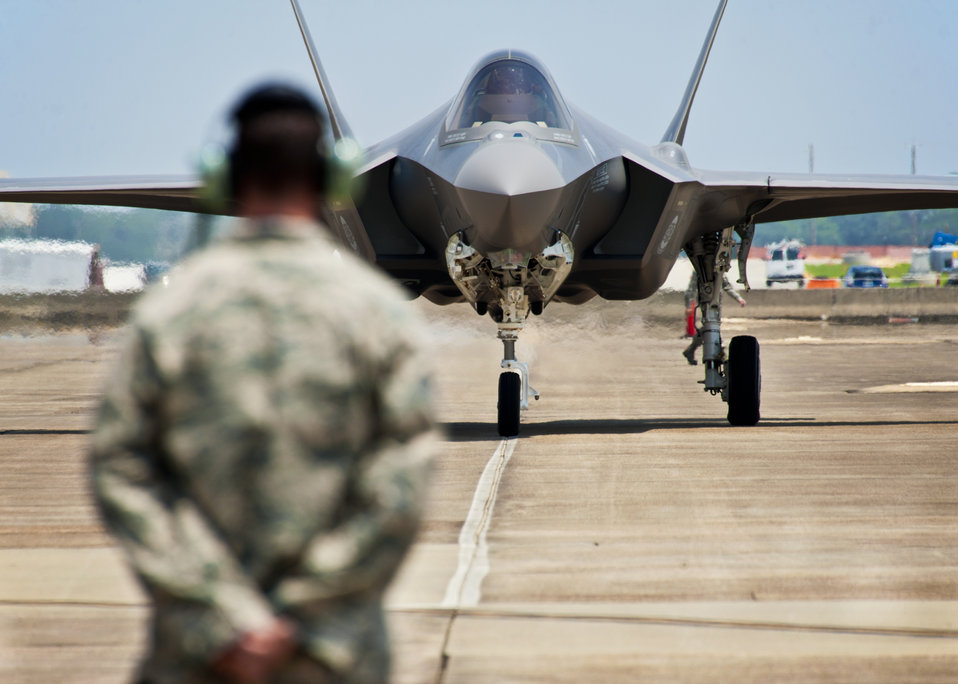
Welcome home

Tech. Sgt. Brian West watches an F-35 Lightning II U.S. approach for the first time July 14, 2011, at Eglin Air Force Base, Fla.